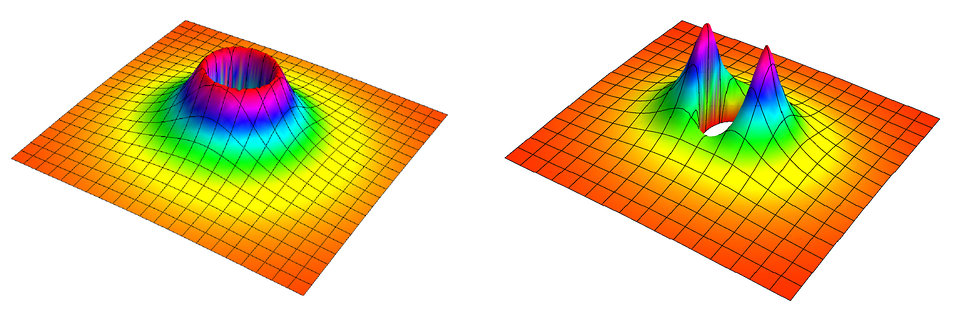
It's Electrifying JILA Scientists Use Electric Fields to Control Chemical Reactions of Ultracold Molecules

Schematic depiction of an energy barrier between polar molecules in an ultracold gas. The fully symmetrical barrier (left) arises only between molecules known as fermions, which if identical cannot occupy the same place at the same time. This barrier greatly reduces the likelihood of chemical reactions. When an electric field is applied to the gas, the barrier is modified (right) so its height varies by direction. Molecules that approach each other parallel to the electric field face a lower barrier and are more likely to react. If molecules approach each other perpendicular to the electric field, then the barrier is raised.